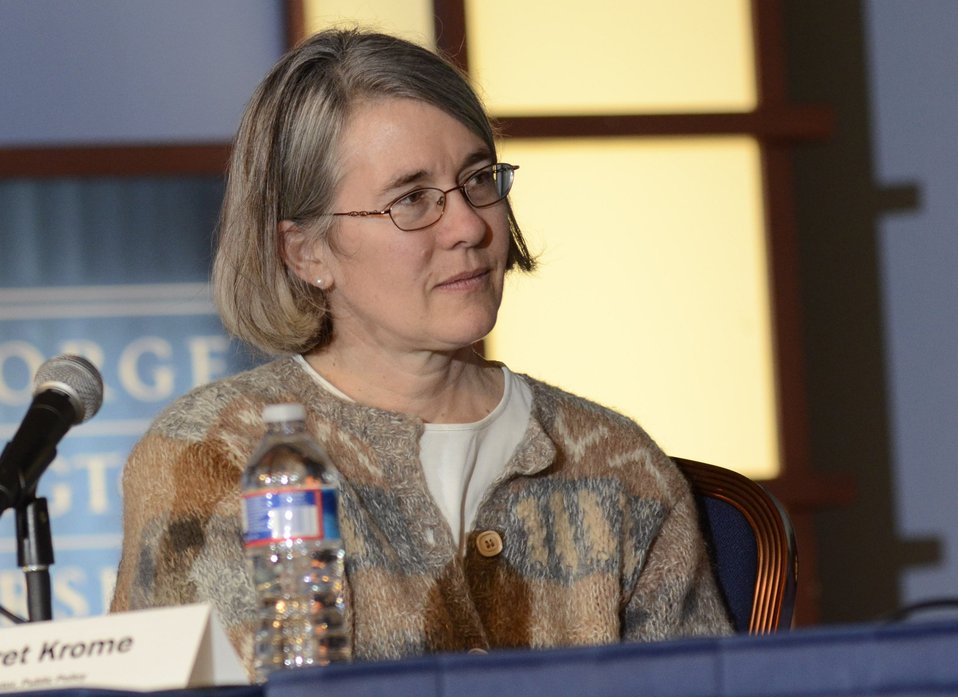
Margaret Krome was a member of the panel for 'Shaping the Farm Bill for a Sustainable Future.' Forum at The Trachtenberg School of Public Policy and Public Administration, George Washington University in Washington, D.C., on Thursday, March 1, 2012.